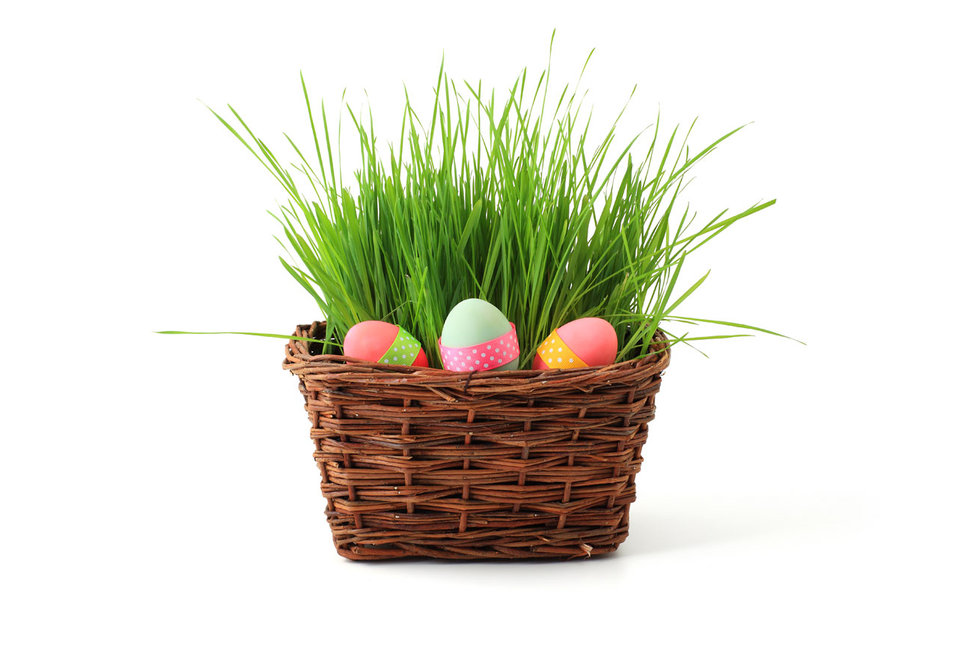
Easter basket

Easter concept - basket with fresh grass and easter eggs isolated on white background.